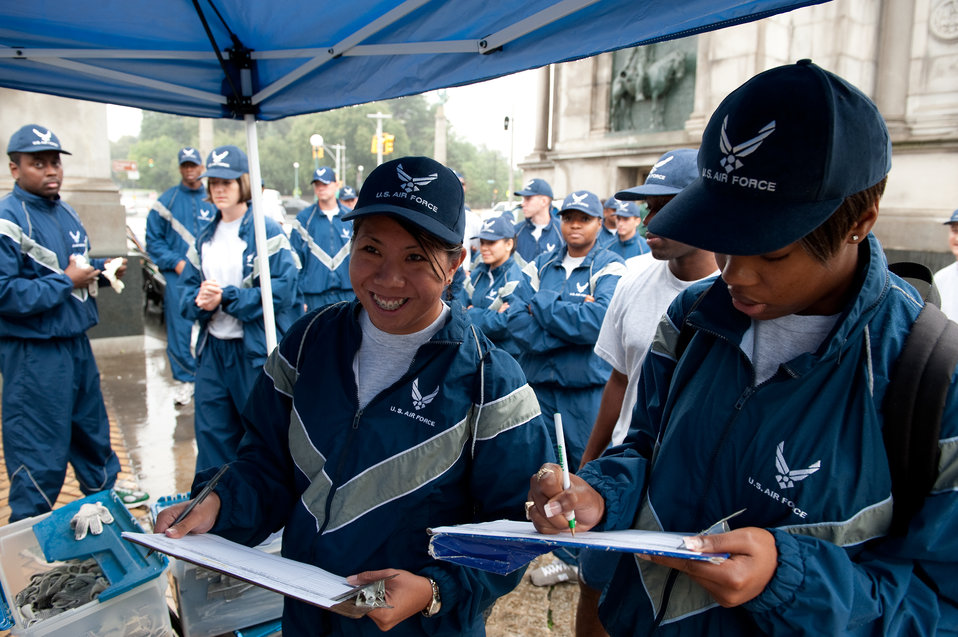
Air Force Week - Volunteer Day

Senior Airman Karen Maguyon, and Airman Shaquilla Kerney were not deterred by the constant rain that fell on 34 Airmen who participated in the cleanup of the Grand Army Plaza in Prospect Park, as part of Air Force Week New York's Volunteer Day Aug. 25, 2010, in Brooklyn, N.Y. Airmen Maguyon and Kerney are the knowledge operations manager and specialist assigned to the 306th Maintenance Group at Joint Base McGuire-Dix-Lakehurst, N.J.